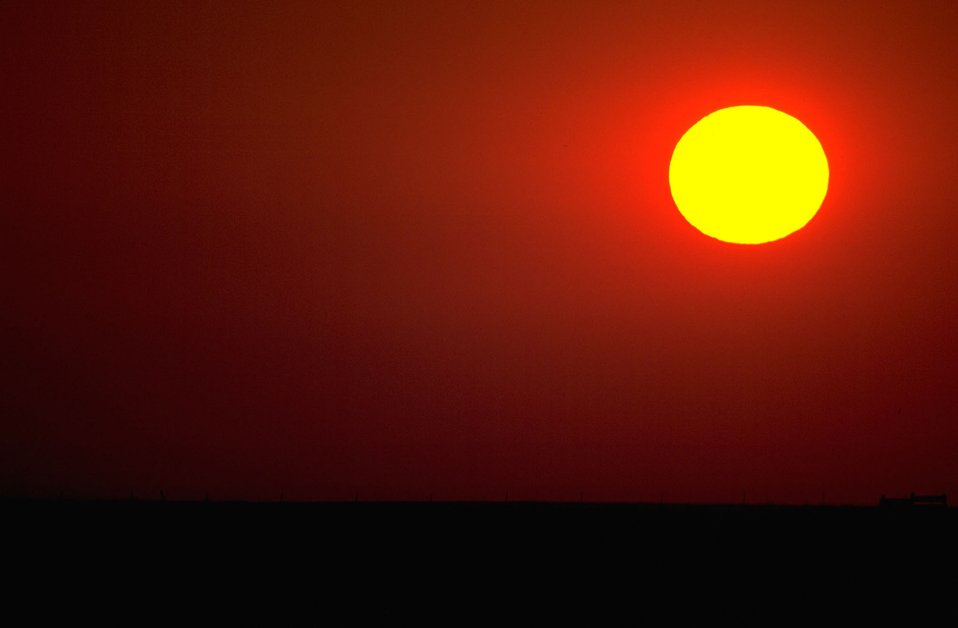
Sunrise over North Ridge in Fort Meade